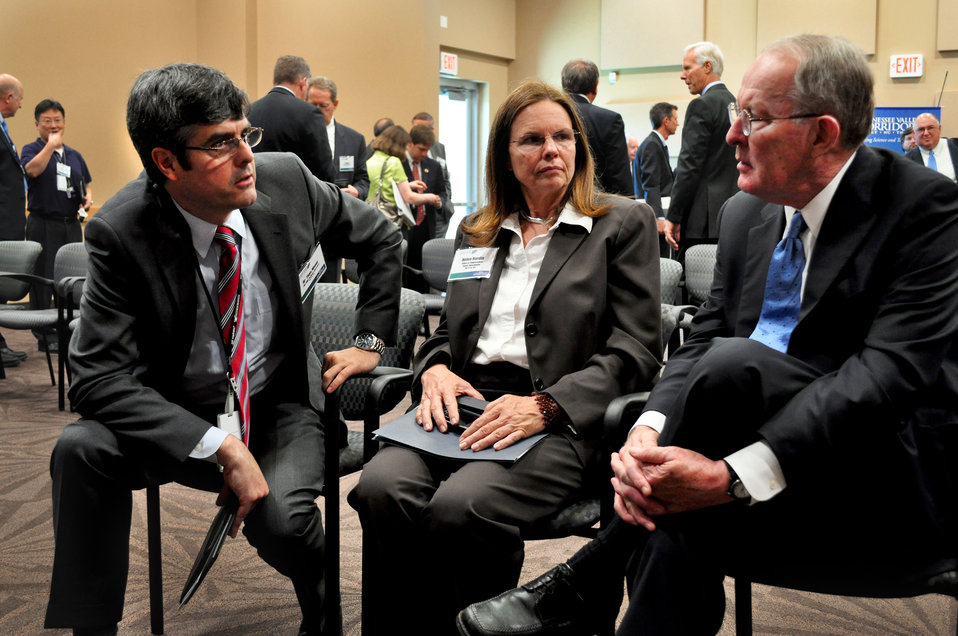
Tennessee Valley Corridor 2013 Oak Ridge

13-062 DOE photo Lynn Freeny 5-29-2013 L to R Dr. Thom Mason Dir. ORNL, Helen Hardin Congressional Staffer and U.S. Senator Lamar Alexander Oak Ridge Tennessee